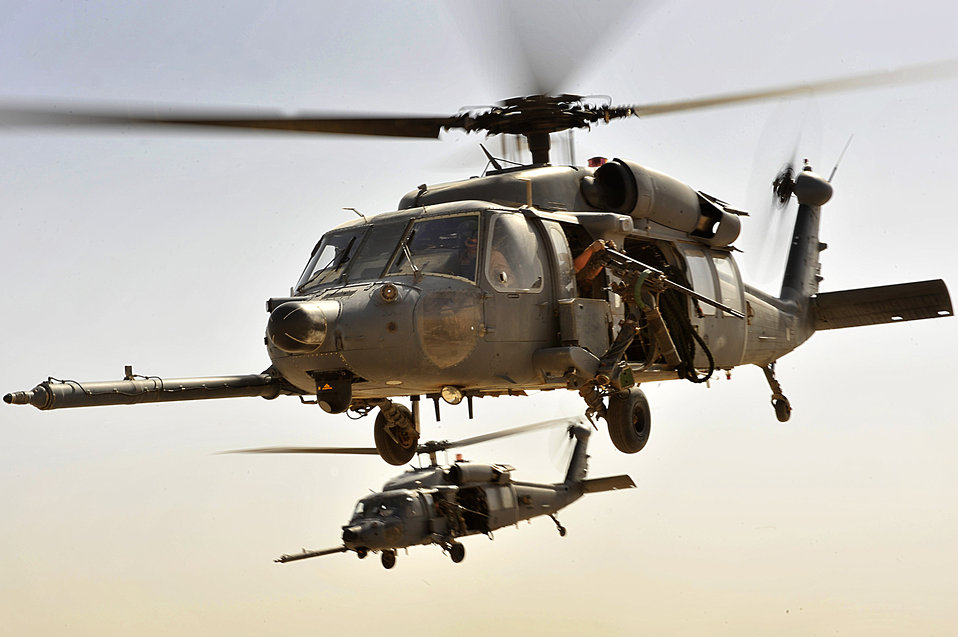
Armed and ready

HH-60G Pave Hawks from the 66th Expeditionary Rescue Squadron fly over an area in Iraq during an operational training exercise Sept. 19.